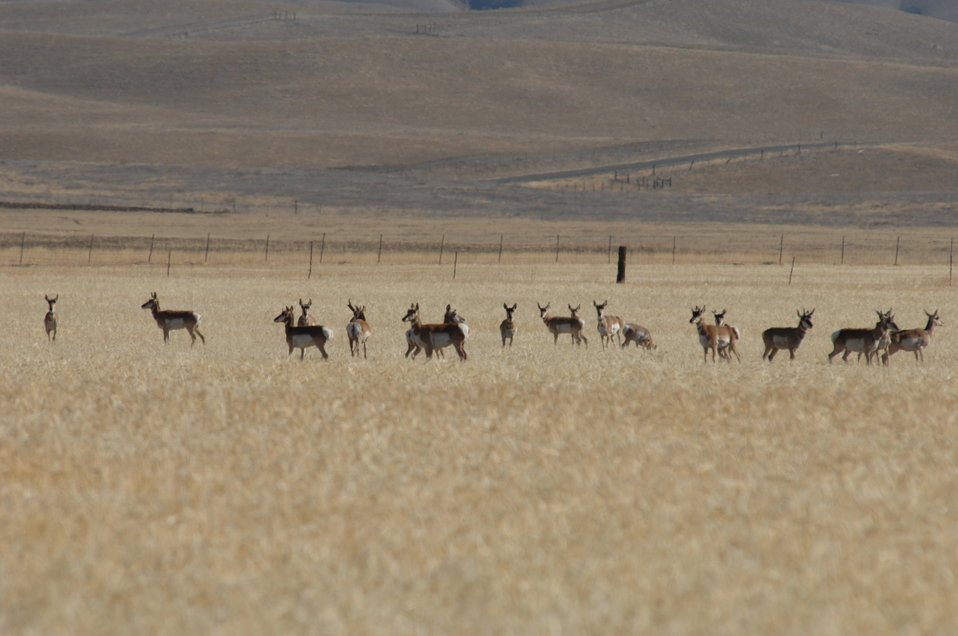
Pronged Horned Antelope on the CarrizoPlain